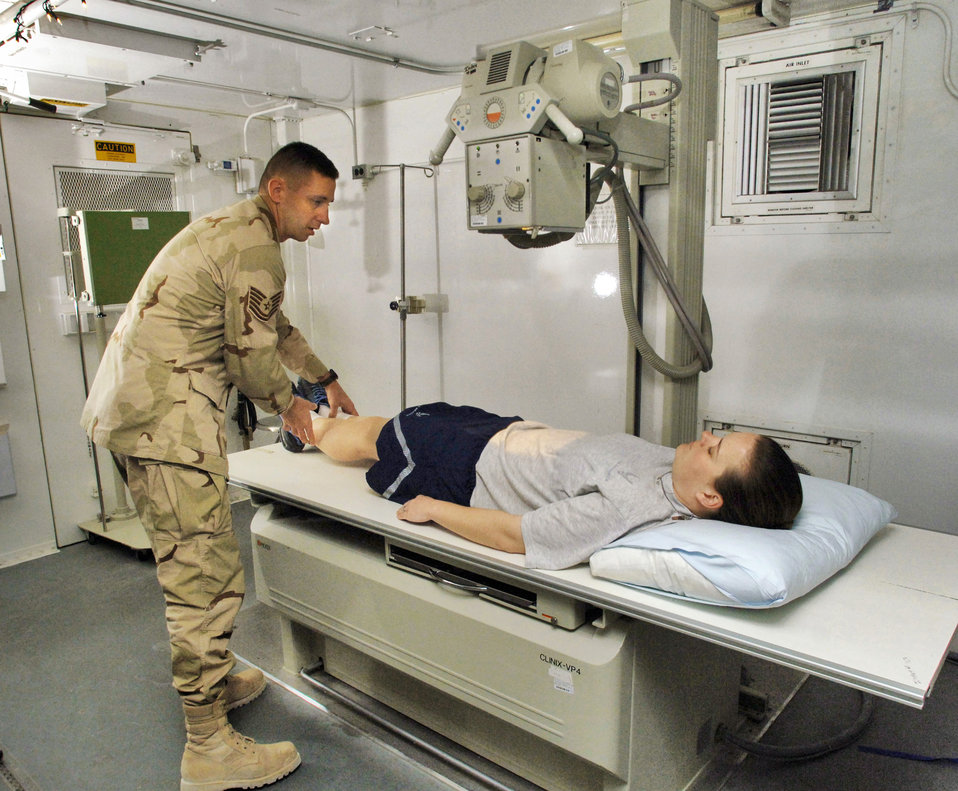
Doctoring downrange

SOUTHWEST ASIA (AFPN) -- Tech. Sgt. Joel Hermesch prepares Airman Renee Wyatt for an X-ray at the 379th Expeditionary Medical Group. The expeditionary medical support unit, with its 10 beds, provides medical care of forward deployed personnel while still in theater. Sergeant Hermesch is a diagnostic imaging craftsman from David Grant Medical Center at Travis Air Force Base, Calif.